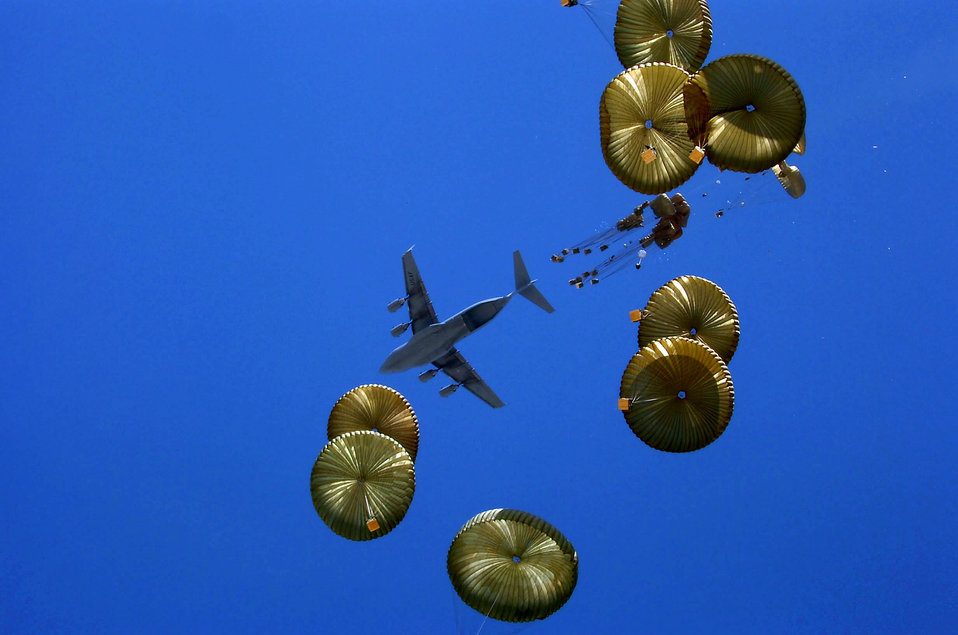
Air mobility maintains the fight in Afghanistan

A C-17 Globemaster III aircrew executes an airdrop mission over Afghanistan. In 2008, Air Force aircraft dropped more than 15 million pounds of supplies in Iraq and Afghanistan.